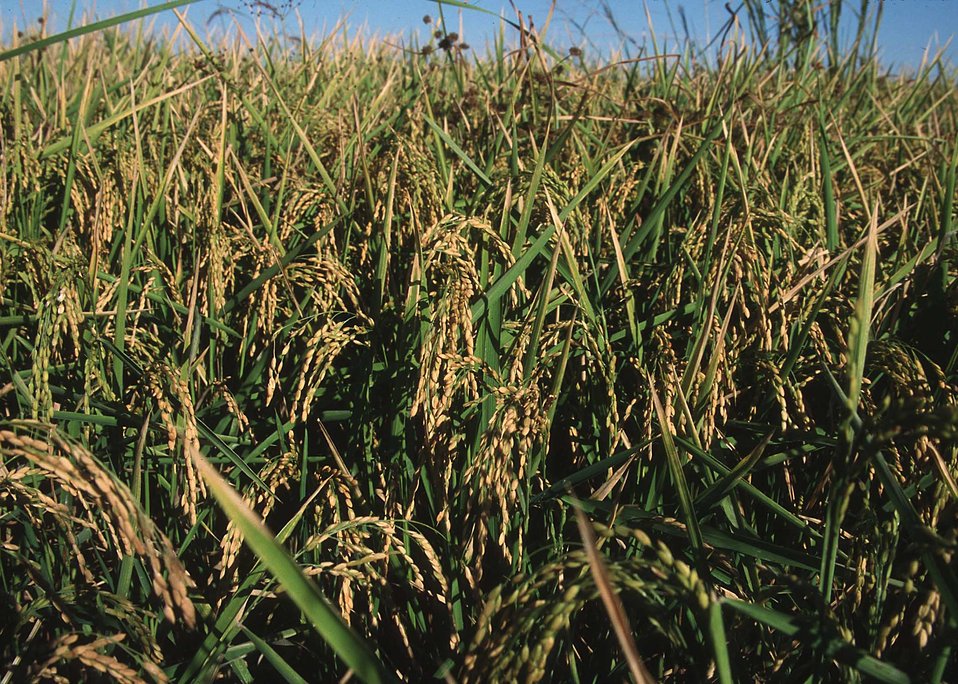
Rice field in Northern California.